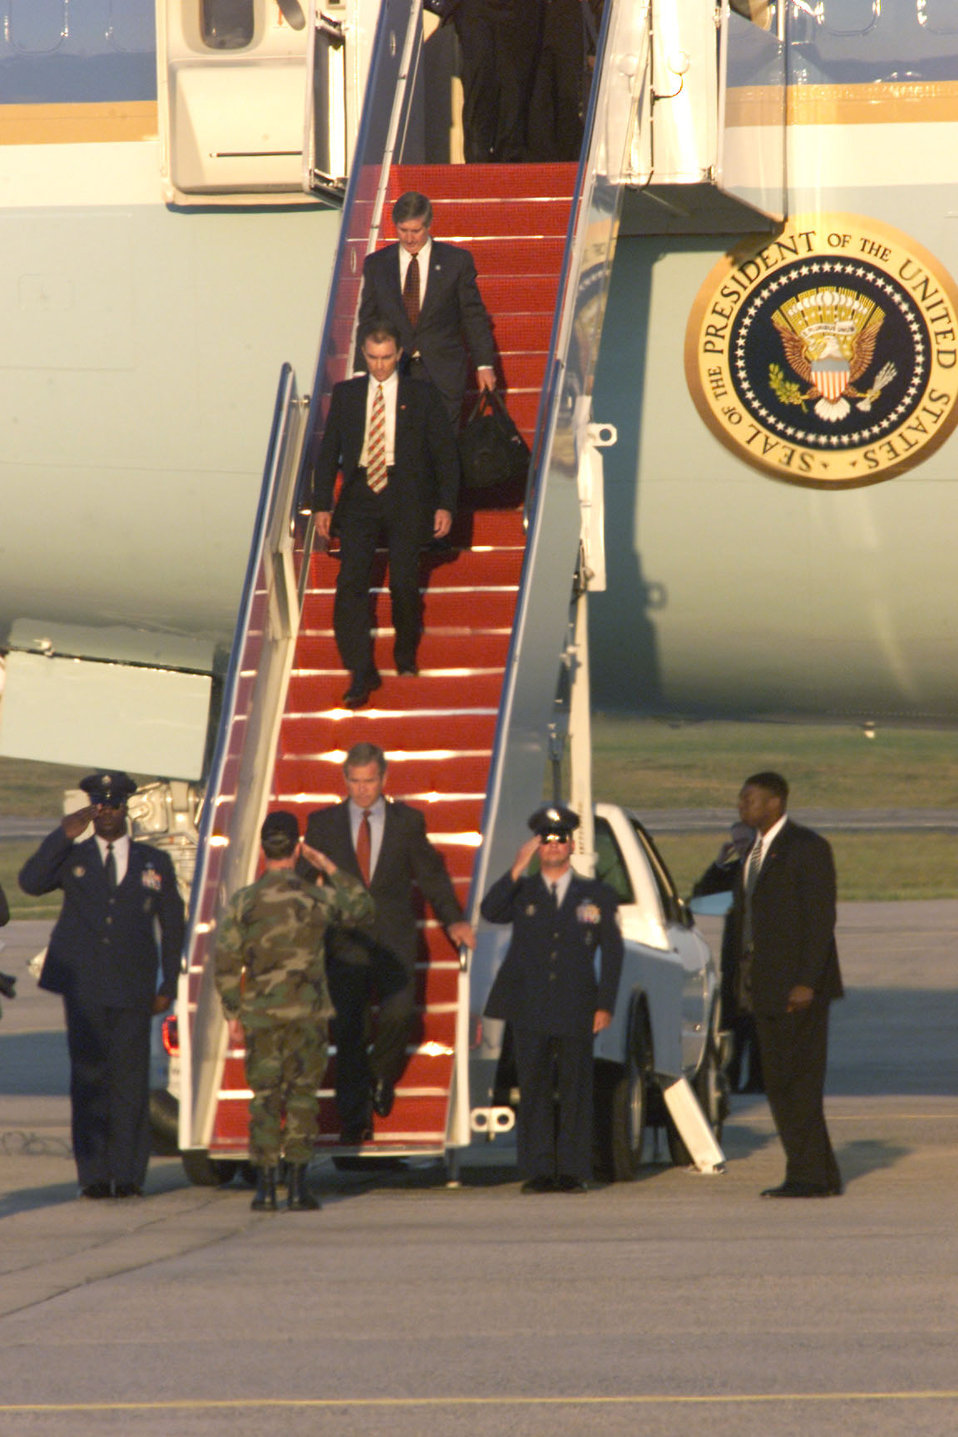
Commander in Chief

President George W. Bush returns to Andrews Air Force Base, Md., on Sept. 11, 2001, from Offutt Air Force Base, Neb. The president was in Florida when he learned of the terrorist attack on the Pentagon. According to the Air Mobility Command History Office, tankers refueled fighters providing cover for Air Force One as the president moved from Florida. By Sept. 12, tankers also flew air refueling missions for the E-4B National Airborne Operations Center, the president's airborne command and control center.